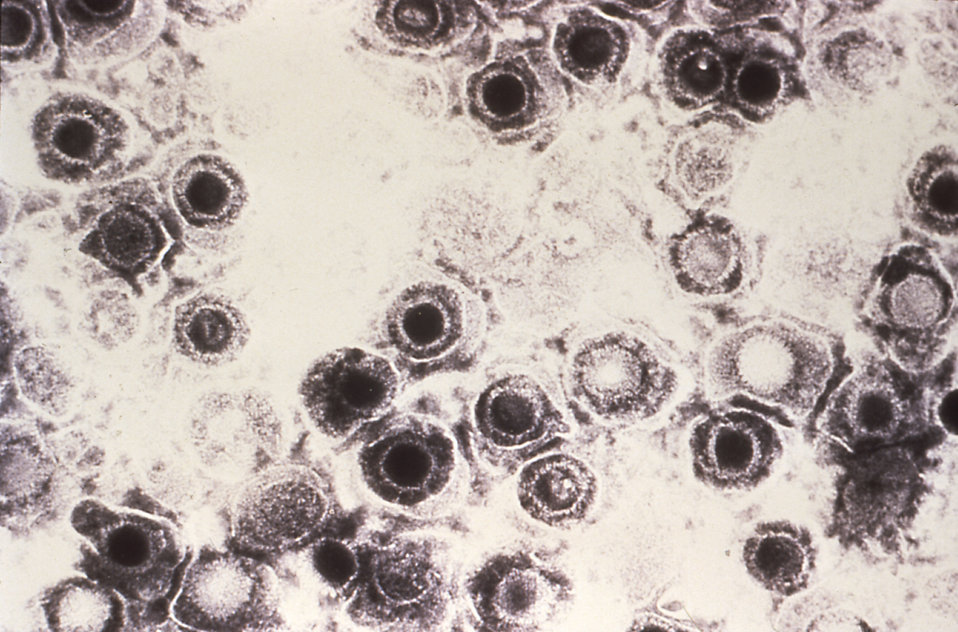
This micrograph confirms the presence of hookworms in a host's intestines where they will reside while obtaining nutrients.